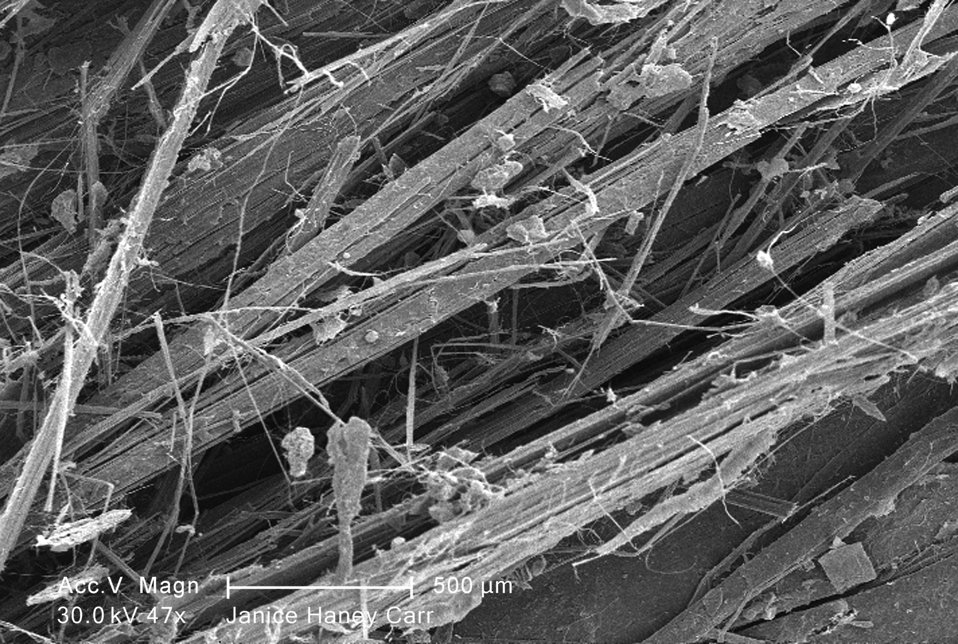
Under a low magnification of 47X, this scanning electron micrograph (SEM) revealed some of the microcrystalline ultrastructure exhibited by a piece of raw chrysotile, or white asbestos, which had been excavated from the Lowell Asbestos Mine on Belvidere Mountain, Vermont.